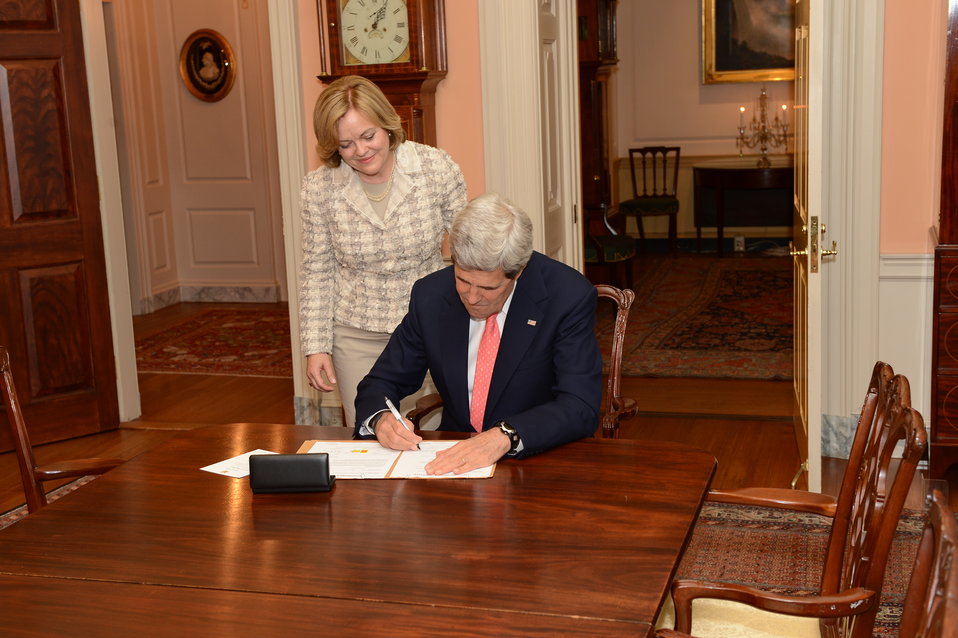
Secretary Kerry Signs the Appointment Papers for Ambassador-Designate Jones

U.S. Secretary of State John Kerry signs the appointment papers for U.S. Ambassador-Designate to Libya Deborah Jones prior to her swearing-in ceremony at the U.S. Department of State in Washington, D.C., on June 11, 2013.